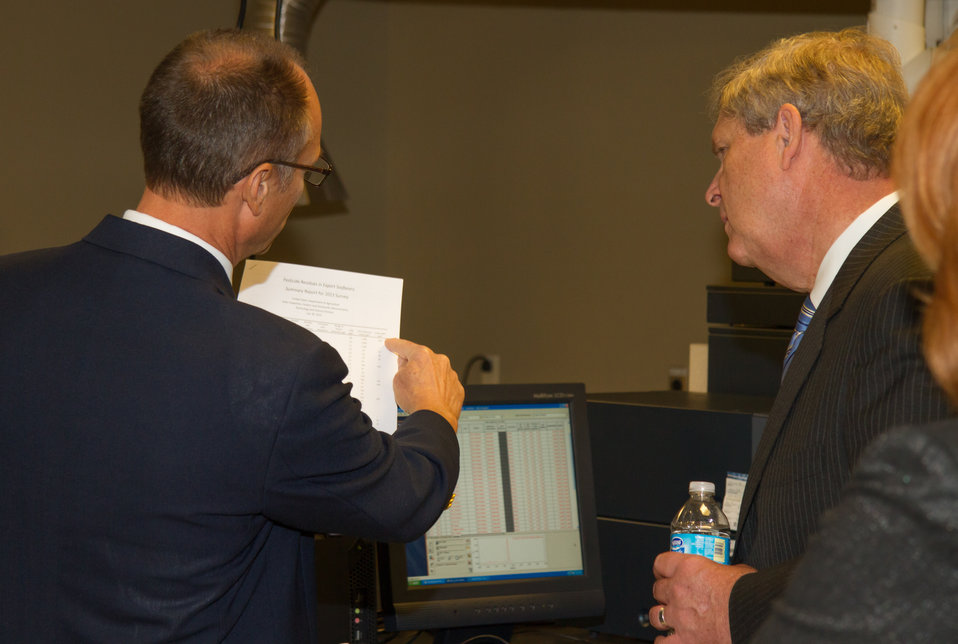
Dr. Tim Norden, (l), Chief of Grain Inspection, Packers and Stockyards Administration (GIPSA), Analytical Chemistry Branch, explains to Agriculture Secretary Tom Vilsak the assessment and reporting of pesticide residues in U.S. grain shipments. GIPSA's annual surveys of representative grain lots provide confidence in the safety of the domestic grain supply and our export grain shipments in Kansas City, MO, on Wednesday, Oct. 23, 2013.